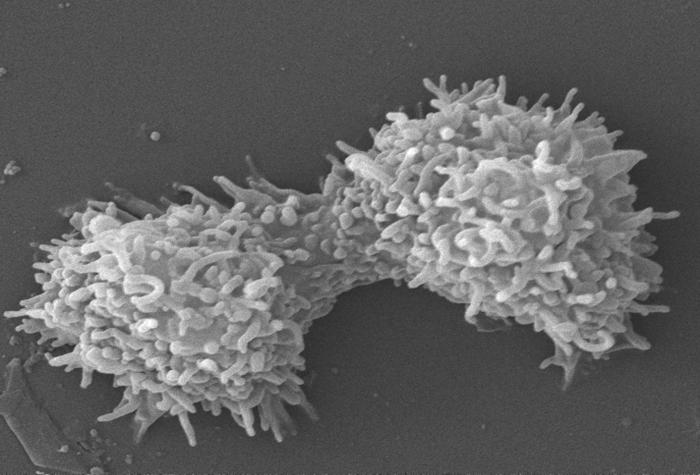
This scanning electron micrograph (SEM) revealed two Acanthamoeba polyphaga protozoa, as they were interacting through their numerous projecting pseudopodia, from the Latin pseudo = false, and podia = feet, extending from the surface of these organisms. These pseudopodia enable the amoebae to move about, and grasp objects in their environment.